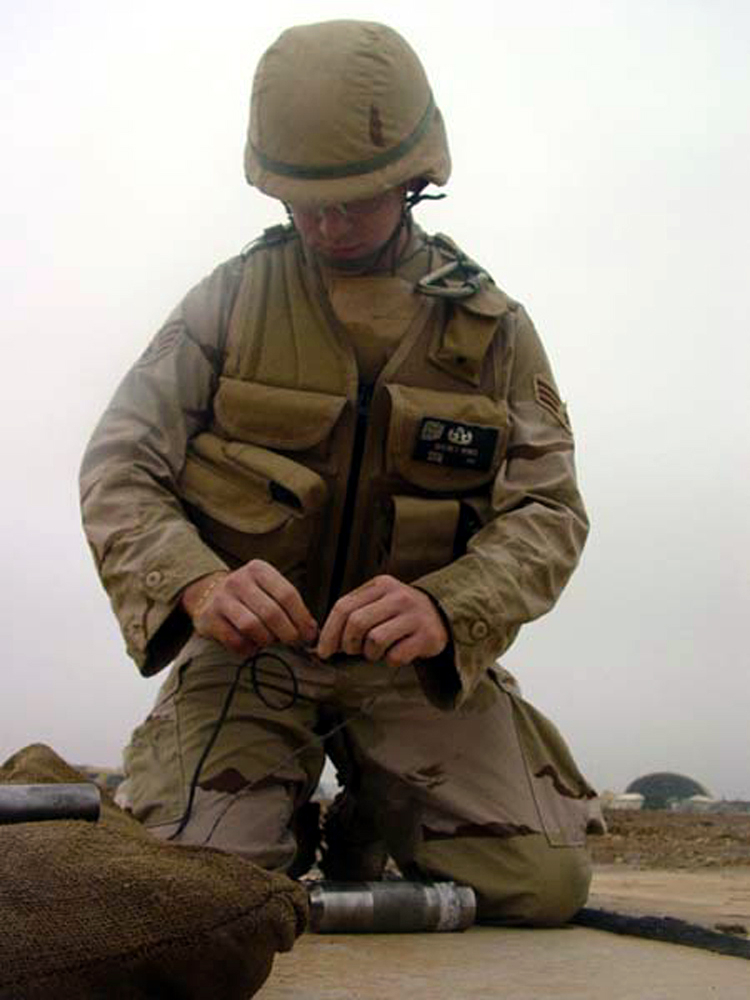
Disarming munitions

TALLIL AIR BASE, Iraq -- Senior Airman Dustin Heines, an explosive ordnance disposal technician, prepares to disarm an unexploded munition. Heines is assigned to the 332nd Expeditionary Civil Engineer Squadron's EOD flight, and is deployed from McGuire Air Force Base, N.J.